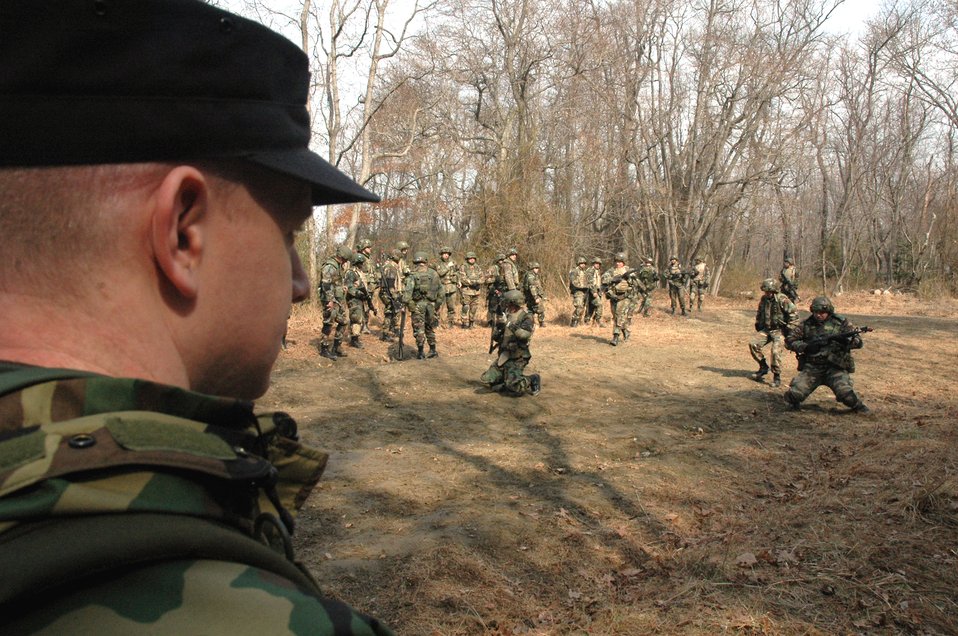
Advanced Contingency Skills Training

Staff Sgt. Wyatt Bloom, contingency skills training instructor, observes as Airmen practice squad and fire team manuevers as part of a tactics and patrolling class for the Advanced Contingency Skills Training Course March 14 on a range on Fort Dix, N.J. The course, made up of more than 300 students, prepares Airmen for upcoming deployments through teaching areas such as deployment tactics, patrolling, convoy operations and self defense. The course is taught by the U.S. Air Force Expeditionary Center's 421st Combat Training Squadron.